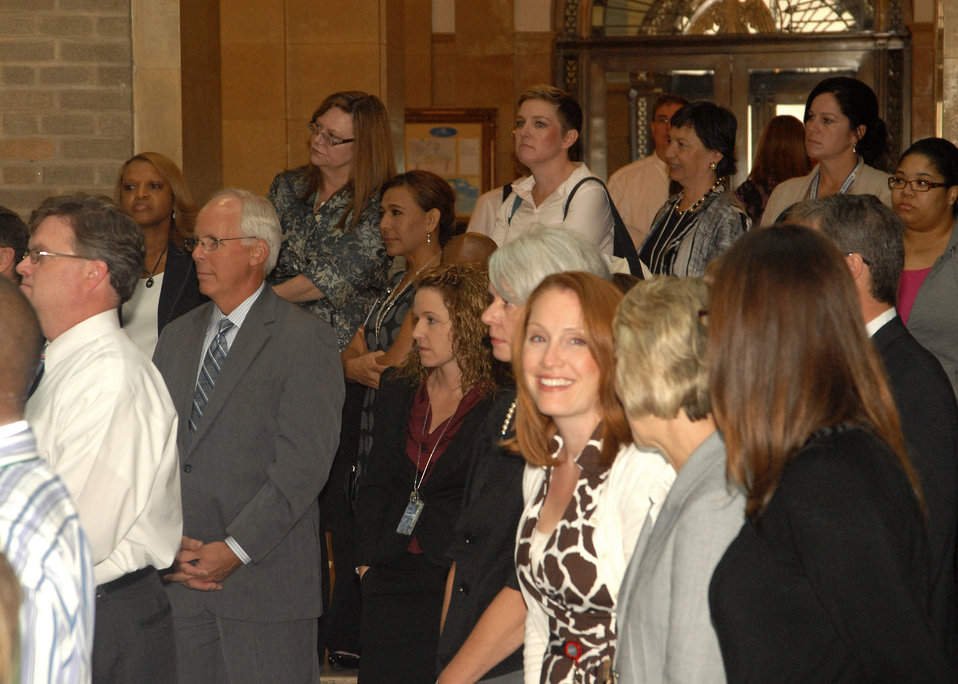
U.S. Department of Agriculture (USDA) employees listen to Agriculture Deputy Secretary Kathleen Merrigan at the U.S. Department of Agriculture’s (USDA) opening ceremony for the 2012 Combined Federal Campaign on Tuesday, Sept. 18, 2012 at the USDA Whitten Building, in Washington, D.C. USDA has set a goal of raising just under $2 million from their employees in the national capital area. The theme for this year’s CFC campaign is “Choose Hope”.